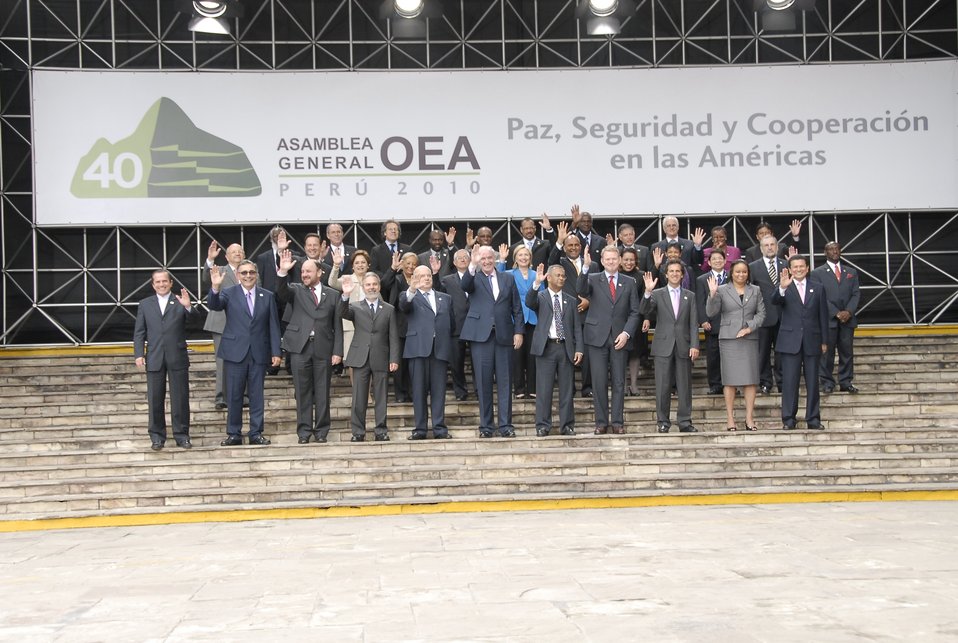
Secretary Clinton With OAS Ministers

U.S. Secretary of State Hillary Rodham Clinton poses for a photo with other ministers at the 40th General Assembly of the Organization of American States in Lima, Peru, on June 7, 2010.